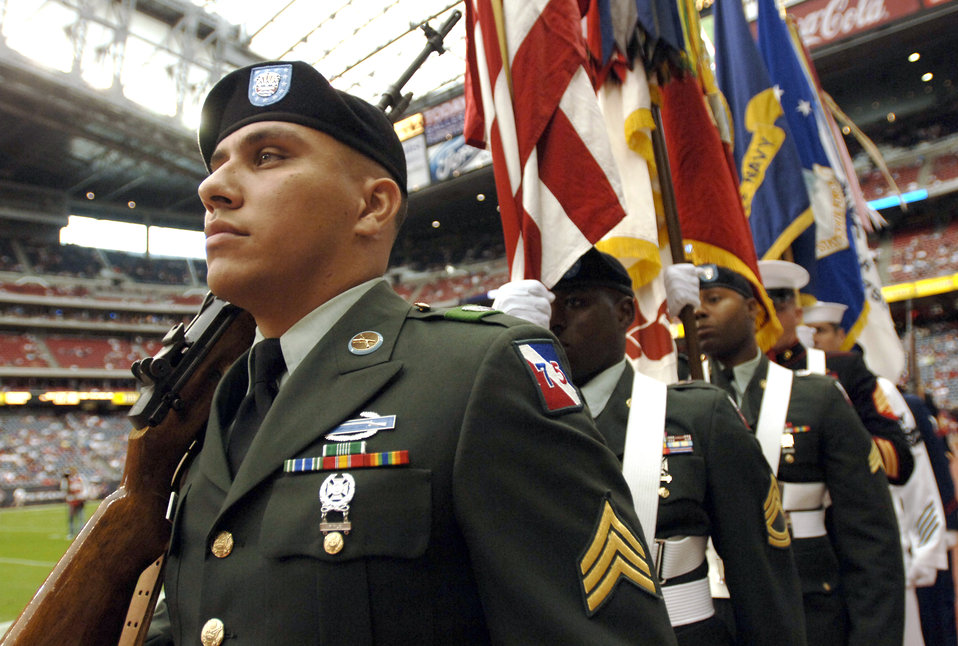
The Texans honored military servicemembers in their Salute to the Military day

A joint color guard from Houston marches into Reliant Stadium in Houston prior to the Houston Texans and Washington Redskins National Football League game Sept. 24. The Texans honored all military servicemembers in their Salute to the Military day.